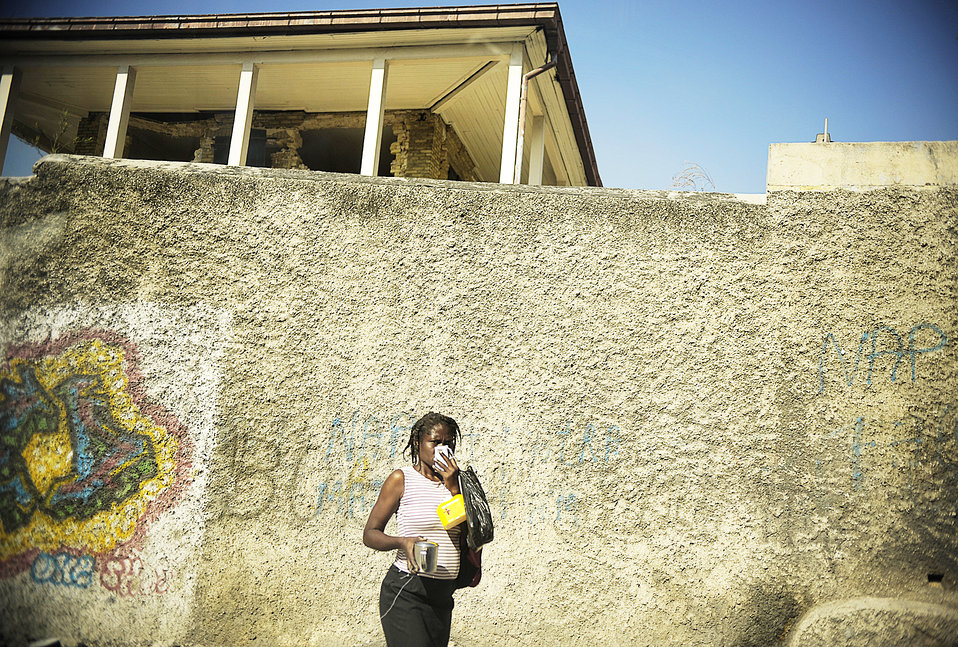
Relief efforts in Haiti

A local citizen in Port-au-Prince, Haiti, covers her nose and mouth due to the smell of devastation in the rubble Jan. 18, 2010. A 7.0-earthquake hit the capital city Jan. 12, 2010.